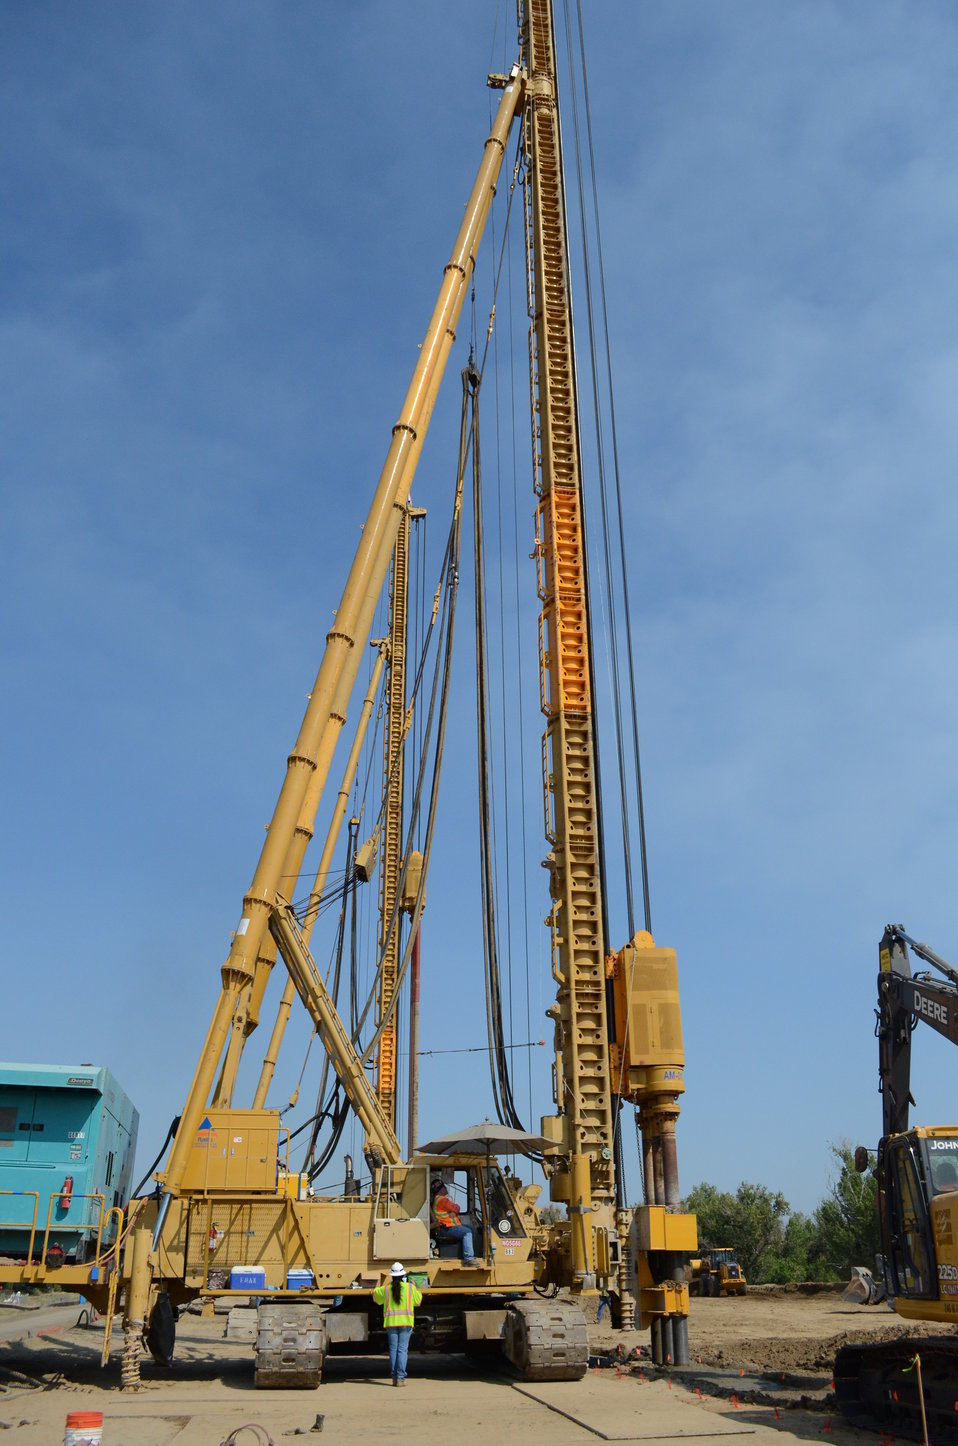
Sutter Basin Feasibility Study Nears Final Milestone

130821-A-ZW314-012: Slurry wall construction continues Aug. 21, 2013 at Shanghai Bend in Yuba City, Calif., courtesy of Sutter Buttes Flood Control Agency and the state of California. This work is part of the U.S. Army Corps of Engineers Sacramento District's recommended plan for the Sutter Basin Feasibility Study. The study will detail the federal government’s role in the project, which will improve more than 40 miles of levee along the Feather River. The study is nearing its final milestone of a Civil Works Review Board – the Corps’ final review before the plan goes to Congress for consideration.